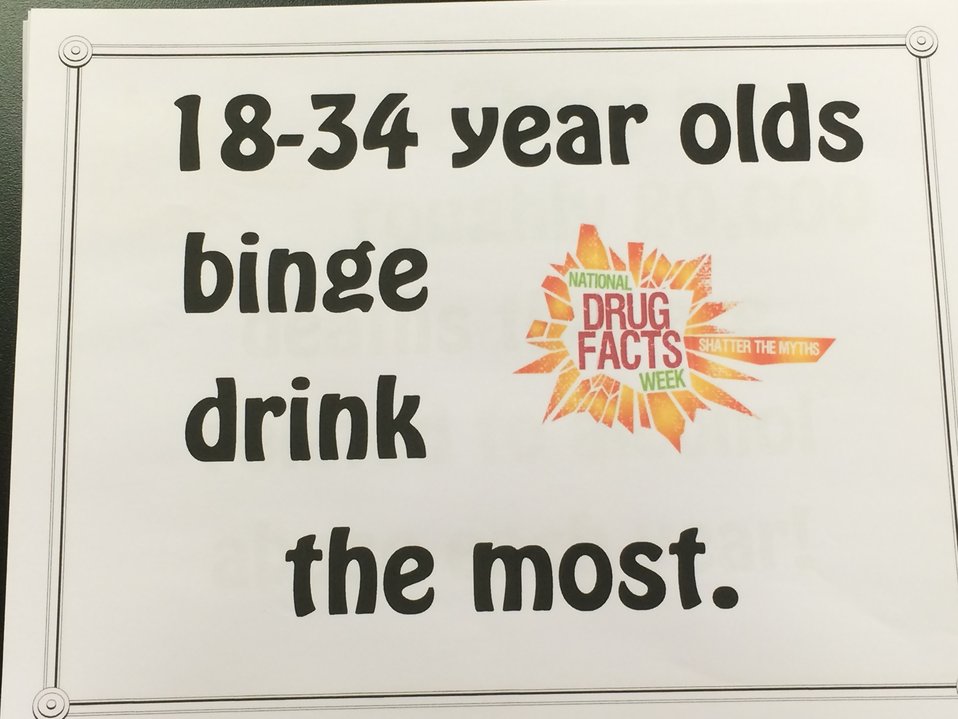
Just the Facts

Teenagers from the Van Buren County SAFE Coalition's, Youth Leadership Council (YLC) in Keosauqua, Iowa participate in various events during National Drug Facts Week, 2014.